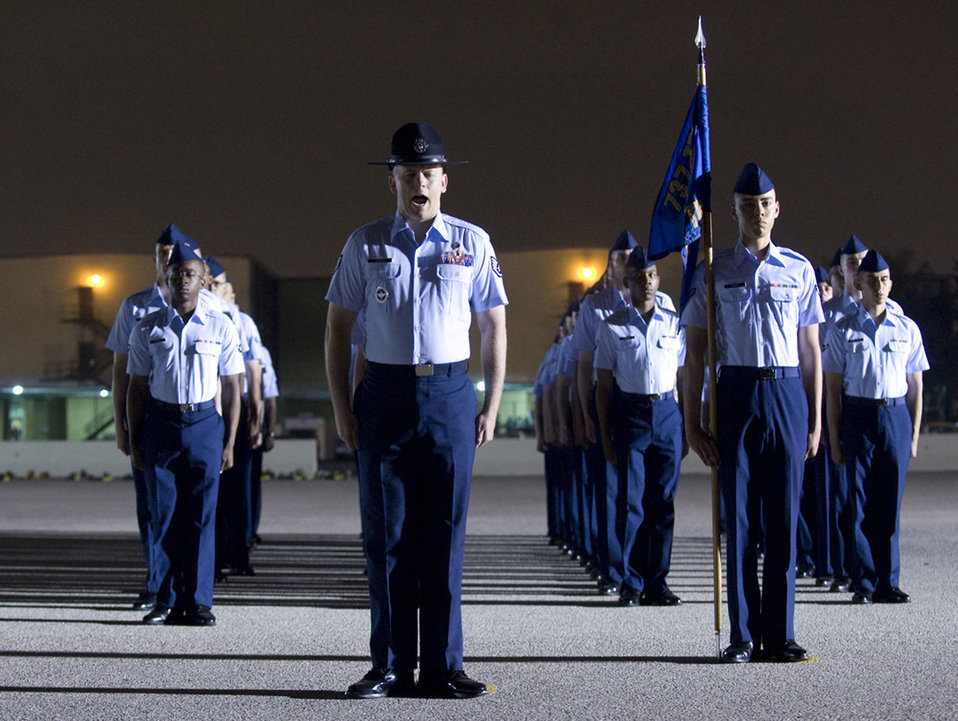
Forward march!

Staff Sgt. Robert George prepares his flight of basic trainees for graduation day May 5 at Lackland Air Force Base, Texas. Sergeant George is a military training instructor assigned to the 324th Training Squadron.